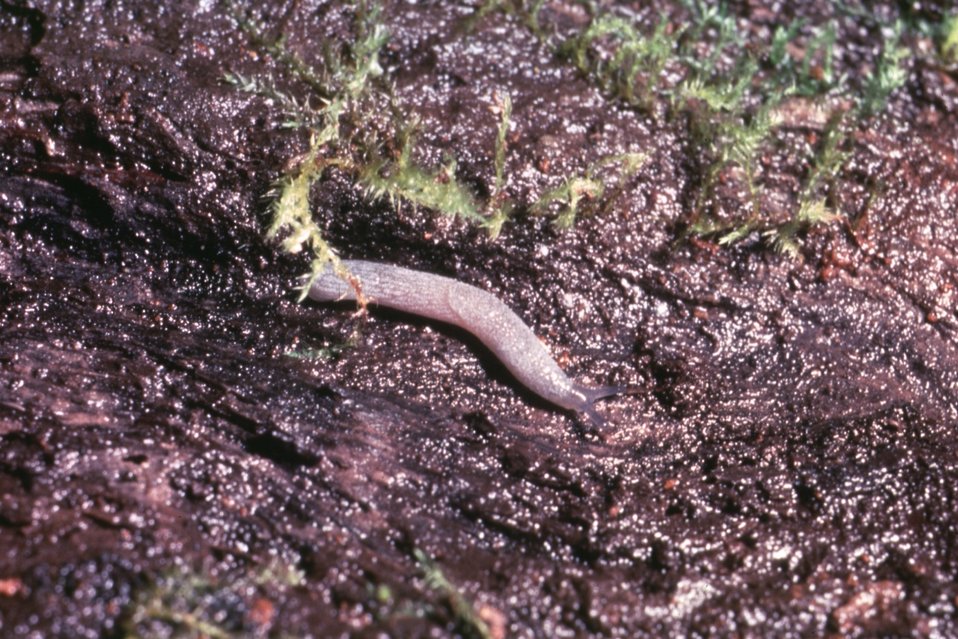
Blue-gray Tail-dropper (Prophysaon coeruleum).